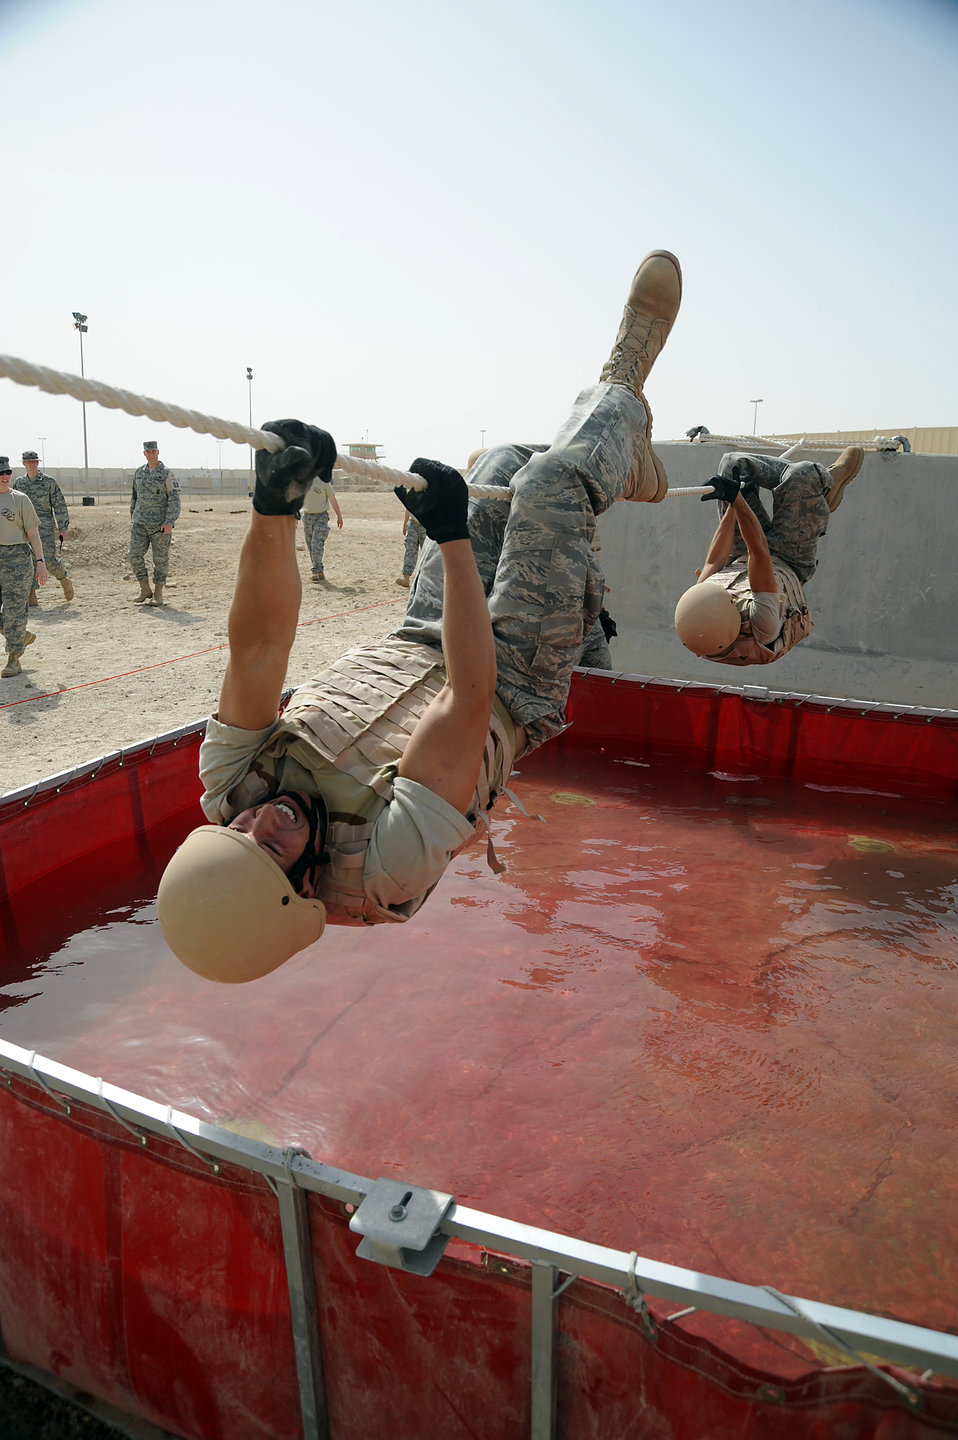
Challenge pushes Airmen, Soldiers

Senior Airman Matthew McCarthy uses a 15 foot rope to cross a water obstacle with his teammates following during a Defender Challenge course April 25 at an air base in Southwest Asia. His team won the competition beating out the second place team by one second. Airman McCarthy is assigned to the 380th Expeditionary Civil Engineer Squadron and deployed from Bolling Air Force Base, D.C. He hails from Omaha, Neb.